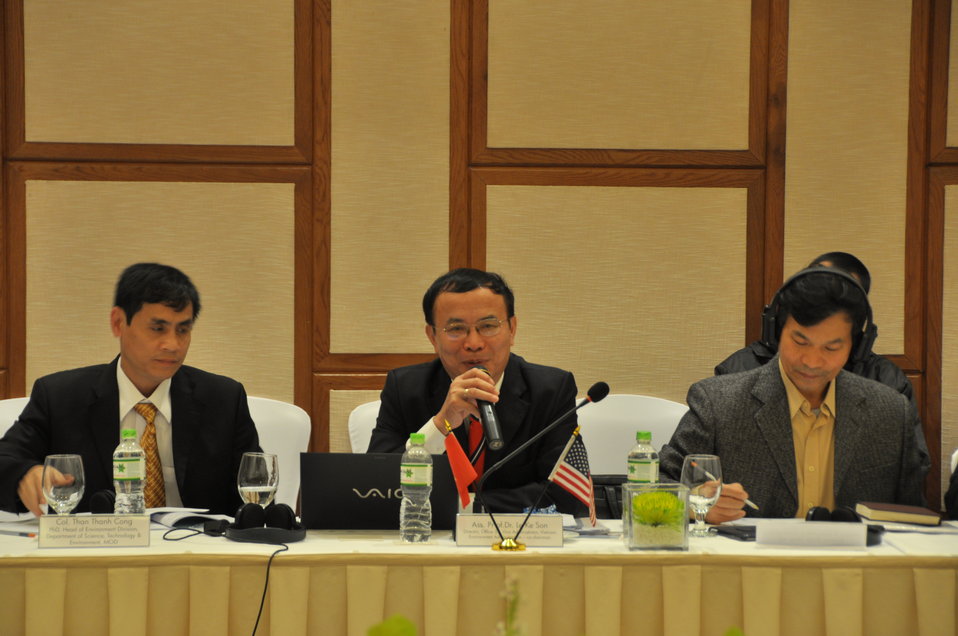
Dr. Le Ke Son, Office 33

Danang, December 4, 2013.